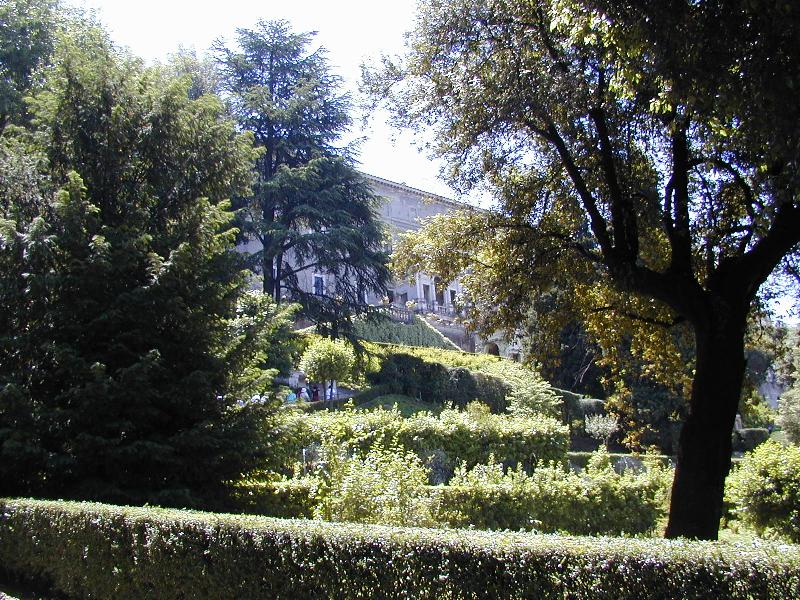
010609 31 villadeste